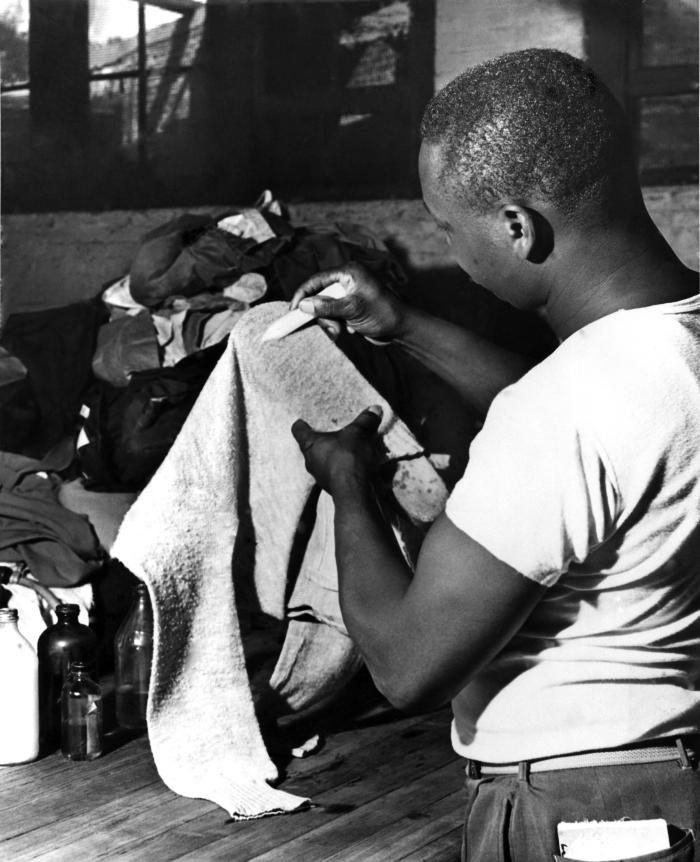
From 1950, this historical photograph was provided by the Center for Disease Control's (CDC), National Institute for Occupational Safety and Health (NIOSH), and depicted an African American worker in a dry cleaning establishment using the chemical 'benzol', another name for 'benzene' (C6H6), in order to 'spot clean' a garment. Benzene is a proven carcinogen, and very flammable. In the 1950s, the Industrial Hygiene Division (IHD) investigated hazards in dry cleaning environments. New non-flammable cleaners had recently been introduced that created concerns about their toxicity. As of 2005, there were approximately 36,000 dry cleaning businesses in the U.S. with most employing less than ten people. The focus today is on the perchloroethylene, used as a solvent in 85% of dry cleaning shops. It is carcinogenic in animals and suspected to be so in humans.